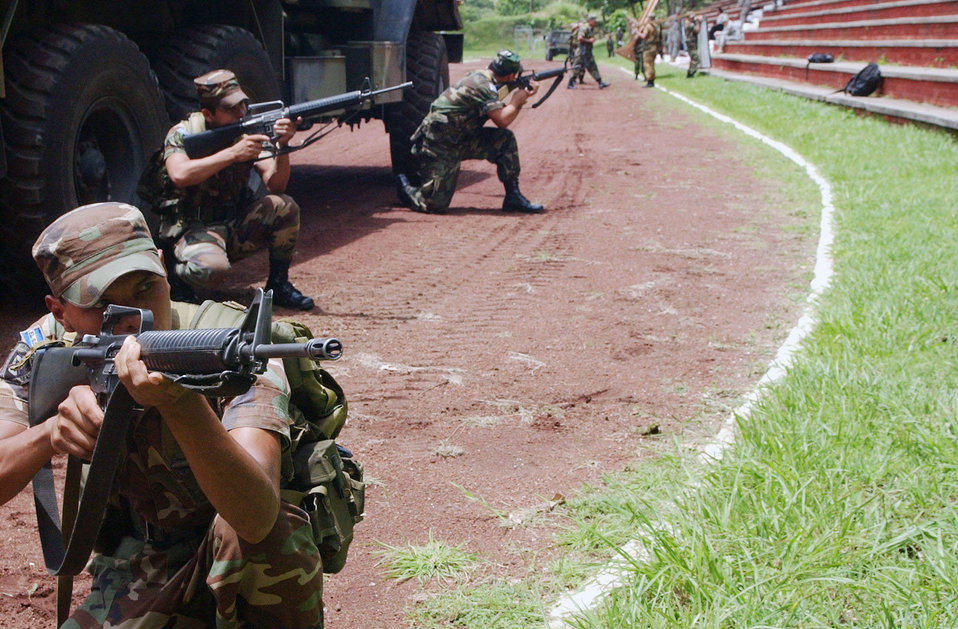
Task force provides OIF training to El Salvadorian military

El Salvadorian soldiers provide force protection as their medical personnel transport wounded soldiers to a simulated triage facility. During a week-long training mission, soldiers were taught force protection measures, convoy defense skills and improvised explosive device detection, to prepare them for their upcoming deployment in support of Operation Iraqi Freedom.